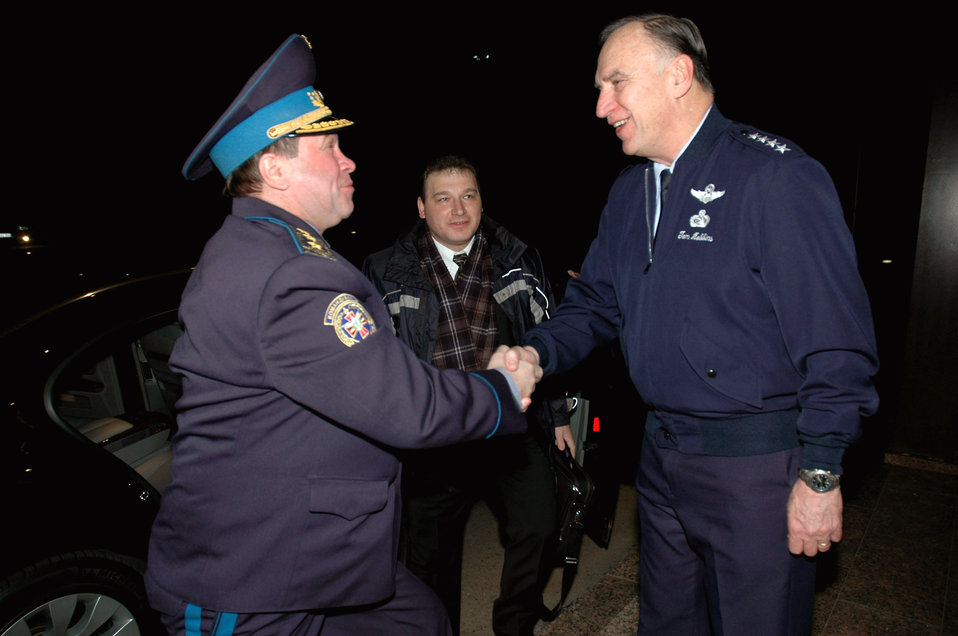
USAFE, Ukrainian air force continue spirit of cooperation

Gen.-Col. Anatoliy Yakovich Toropchyn and Gen. William T. Hobbins greet each other at the beginning of a four-day visit focused on bilateral relations Jan. 24 at Ramstein Air Base, Germany. General Toropchyn is the commander in chief of the Ukrainian air force. General Hobbins is the U.S. Air Forces in Europe commander.